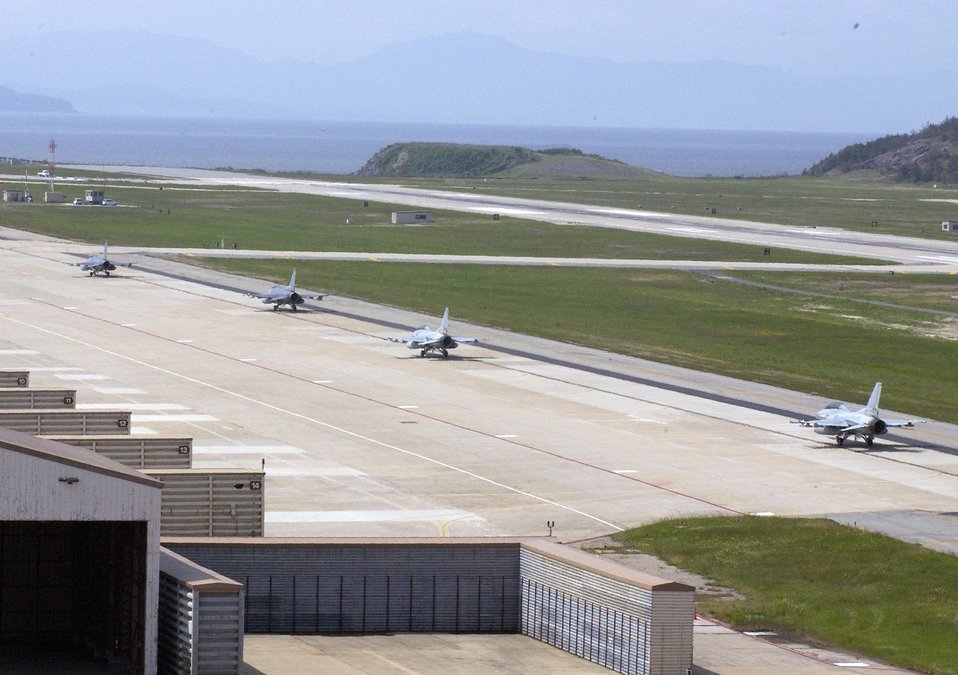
Kunsan, South Korea team up for joint training exercise

F-16 Fighting Falcons from the 8th Fighter Wing and South Korean air force's 111th Fighter wing prepare to take off for a joint training exercise June 8 from Kunsan Air Base. South Korea. This is the first time since the South Korean 111th Fighter Squadron moved to Kunsan AB that the South Korean and American units have briefed, flown and debriefed together on a dedicated mission.